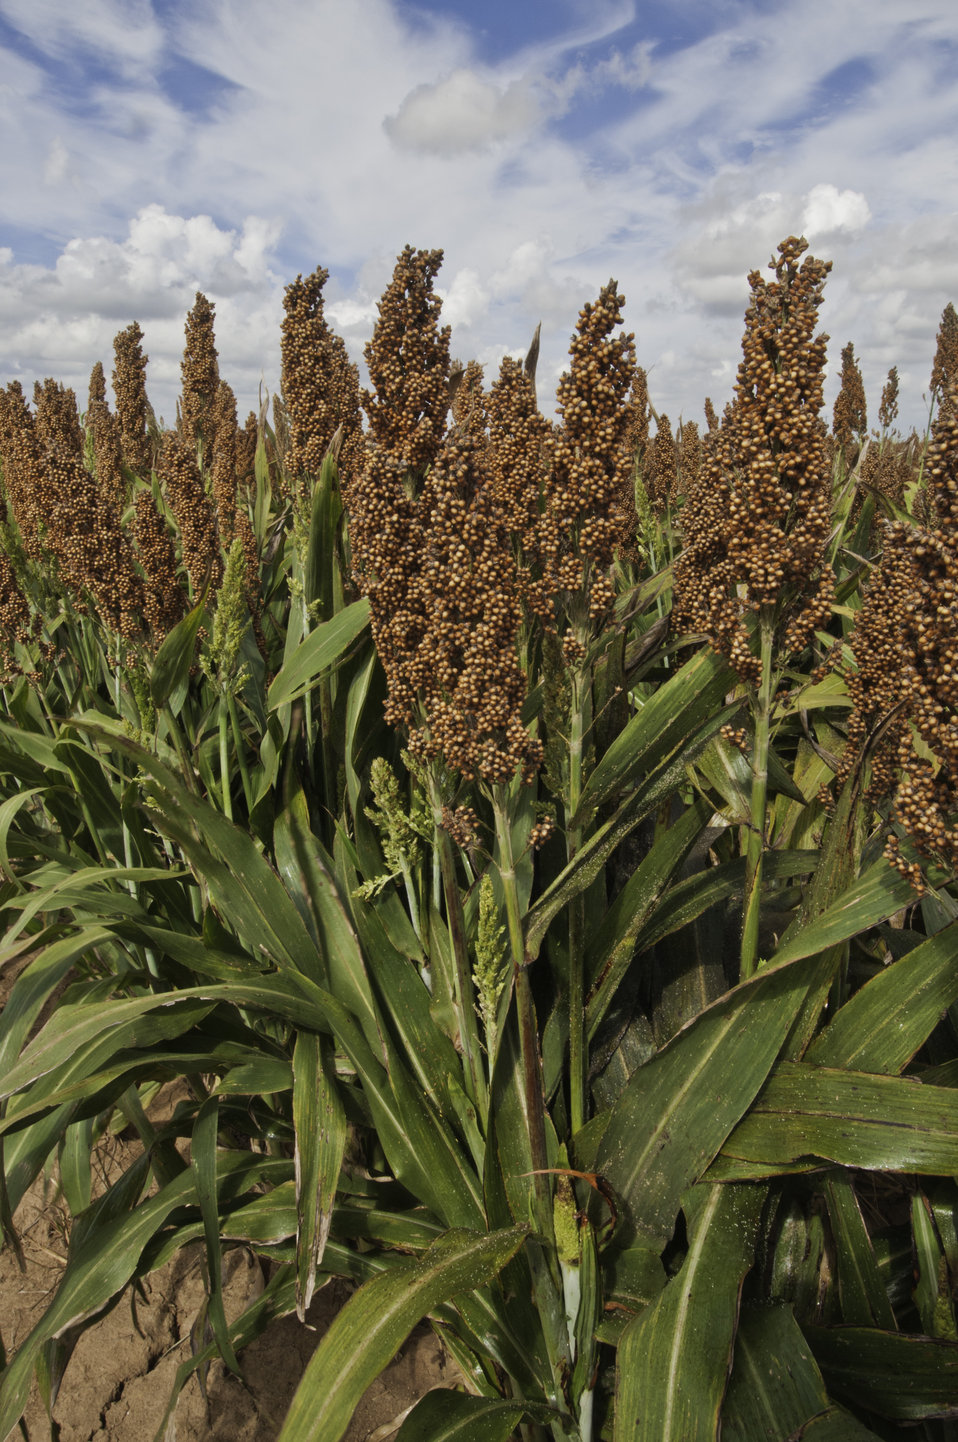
Grain sorghum grows on the Wilder Farms Navasota, TX on Aug. 23, 2013. The ground shows signs of the Texas drought but the crop shows no ill affects from the drought USDA photo by Bob Nichols.